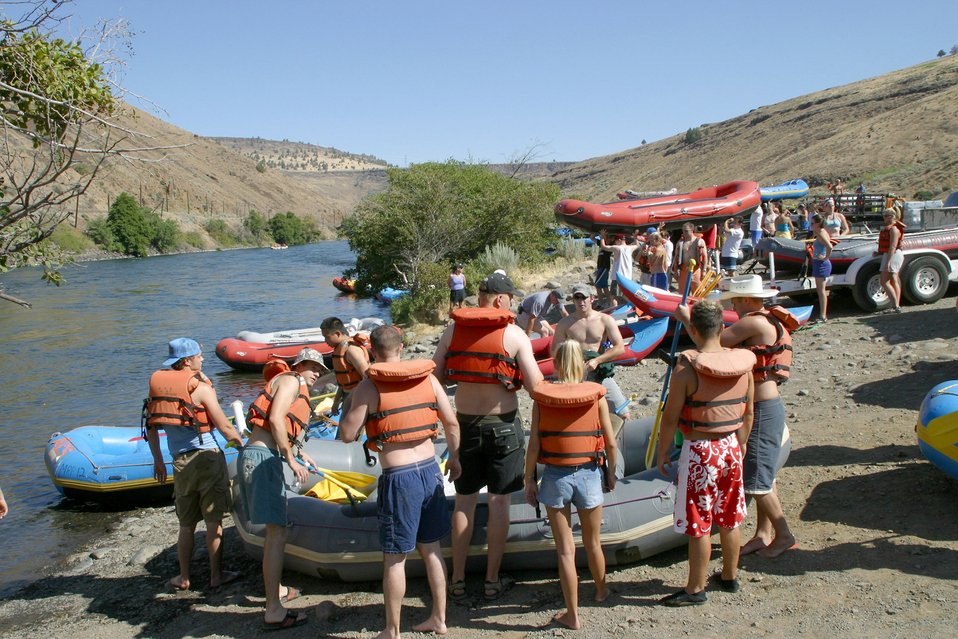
Over 200,000 people a year float the Lower Deshutes River.